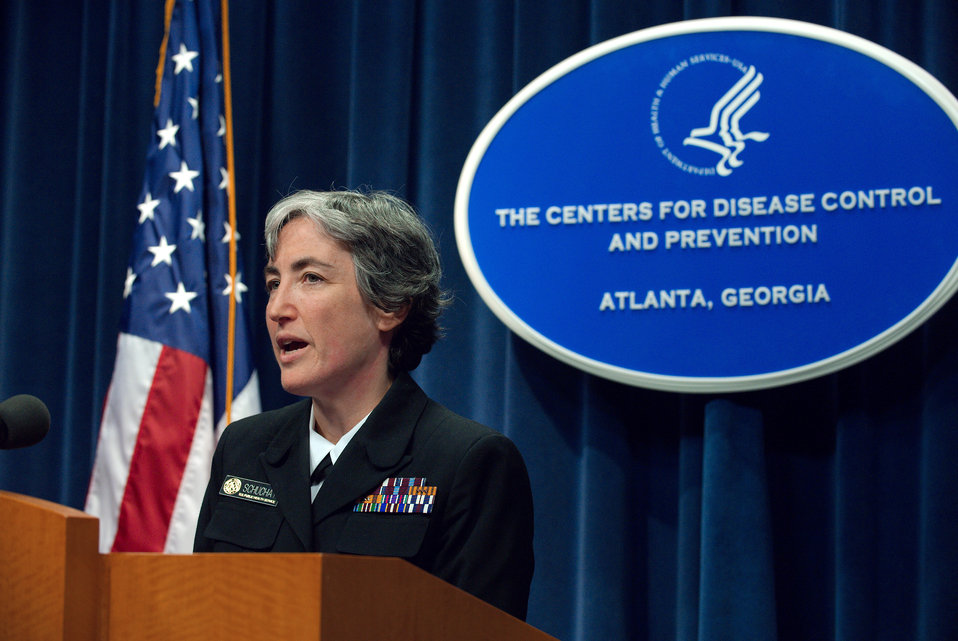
This 2009 photograph depicts the Interim Deputy Director for Science and Public Health Program, Rear Admiral Anne Schuchat, M.D., at the podium during a Centers for Disease Control (CDC) press briefing held in order to discuss an update in the investigation of cases of swine influenza in California and Texas. CDC issued an MMWR dispatch on Tuesday, April 21, 2009. This briefing updated information included in the dispatch.